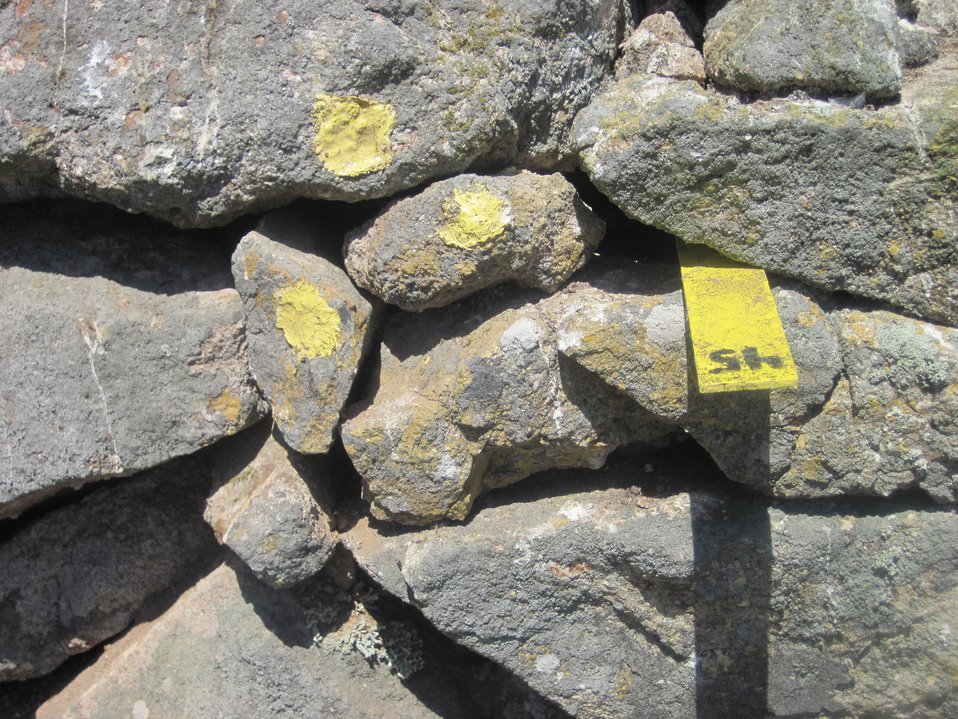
ashy storm-petrel nesting crevice

Southeast Farallon Islands